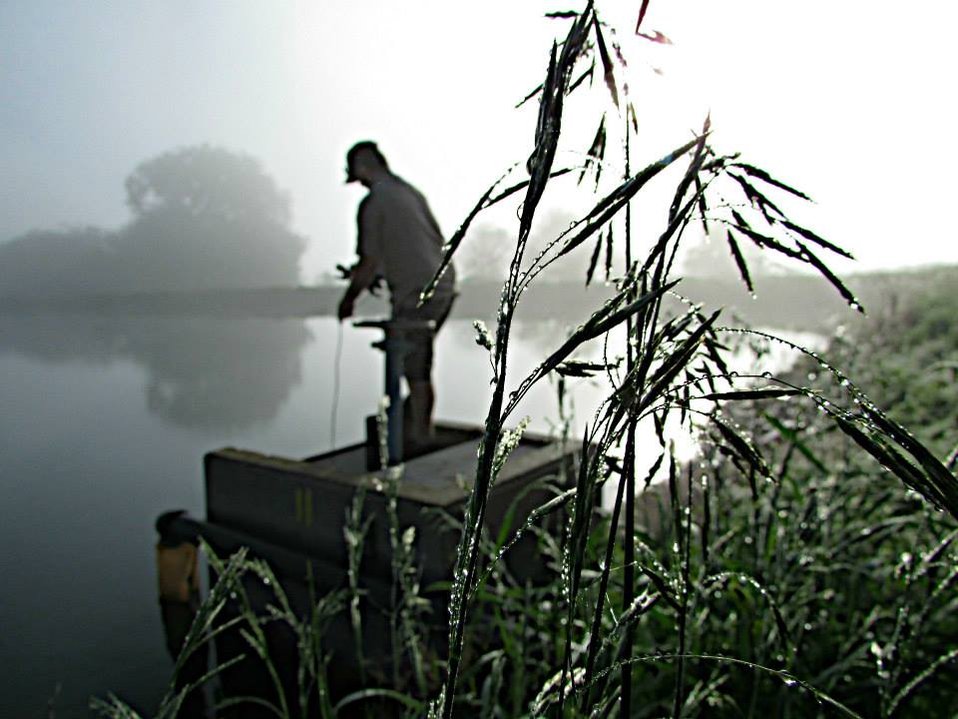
Dew

Every morning we check the oxygen levels of the pond.